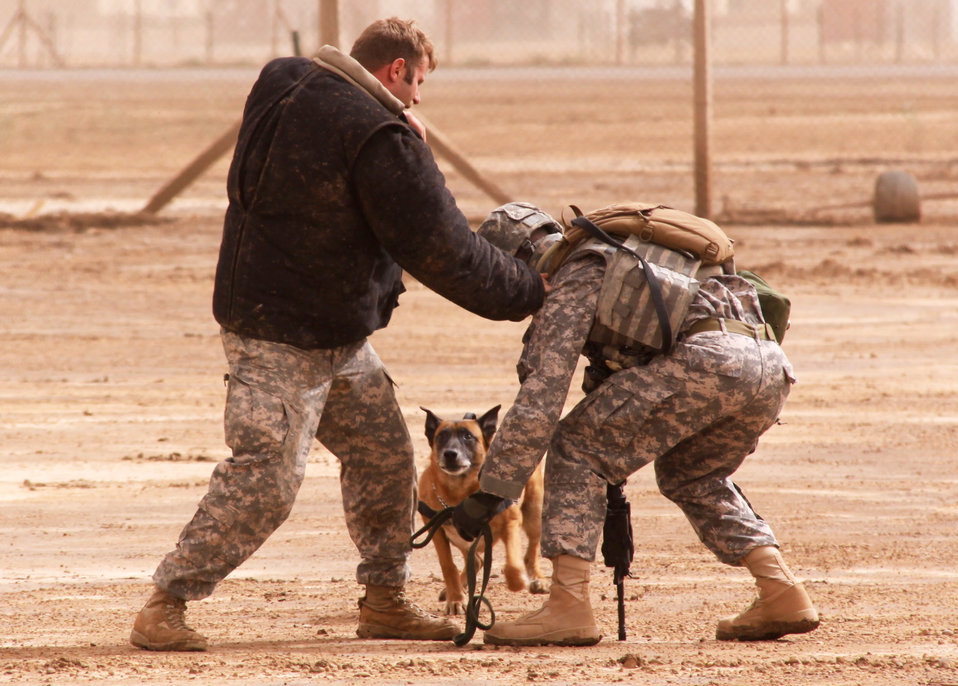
K-9, handler work together to keep servicemembers safe

Military working dog Robby charges a simulated aggressor to protect his handler, Senior Airman William Bailey, during a training session at Camp Taji, Iraq. Airman Bailey is a Joint Expeditionary Tasking Airman from the 732nd Air Expeditionary Group attached to the Army's 1st Calvary Division.